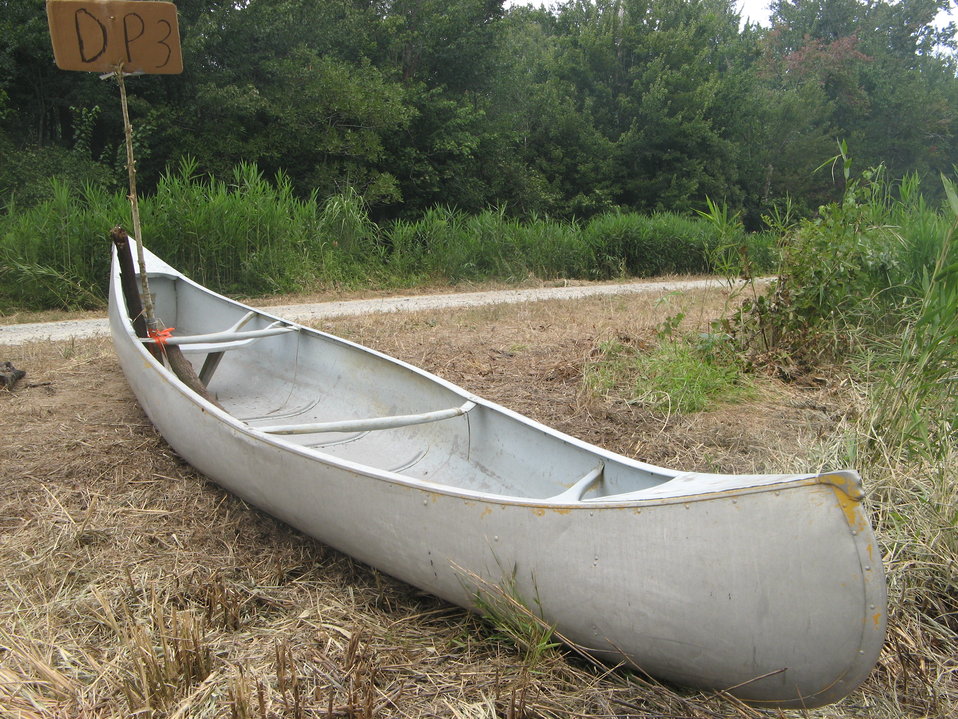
Innovative signpost

Suffolk, VA, Aug. 11, 2011. A canoe used to transport firefighters across ditches also serves as a signpost for a drop point for the Lateral West wildfire on Great Dismal Swamp National Wildlife Refuge.